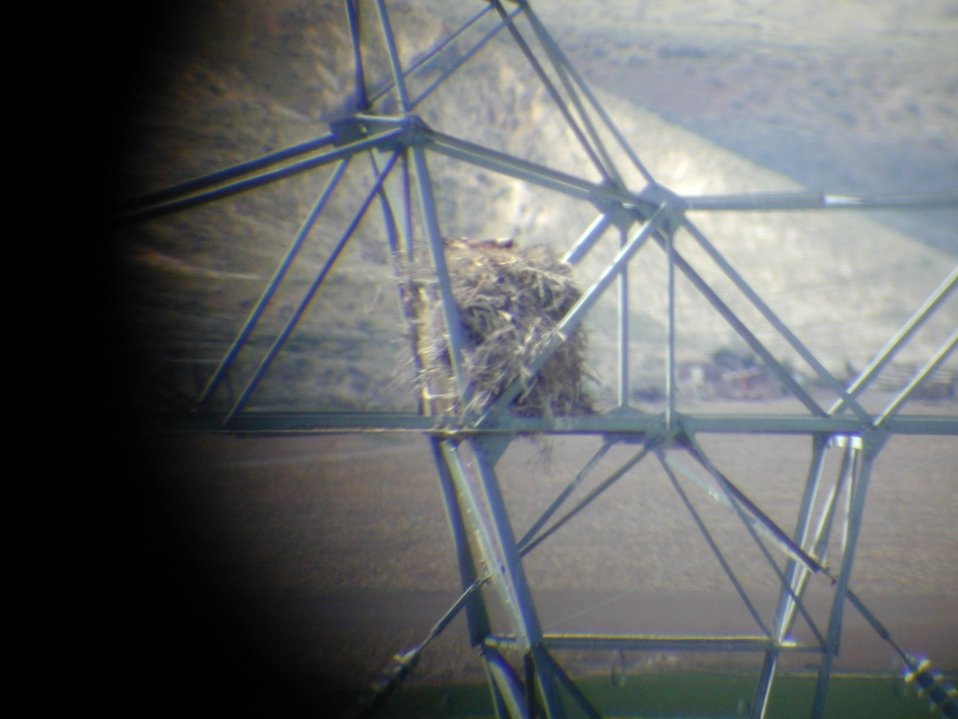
Pivet Sprinkling System in the Snake River Birds of Prey National Conservation Area Snake River Birds of Prey National Conservation Area Lower Snake River District LSRD Snake River Canyon